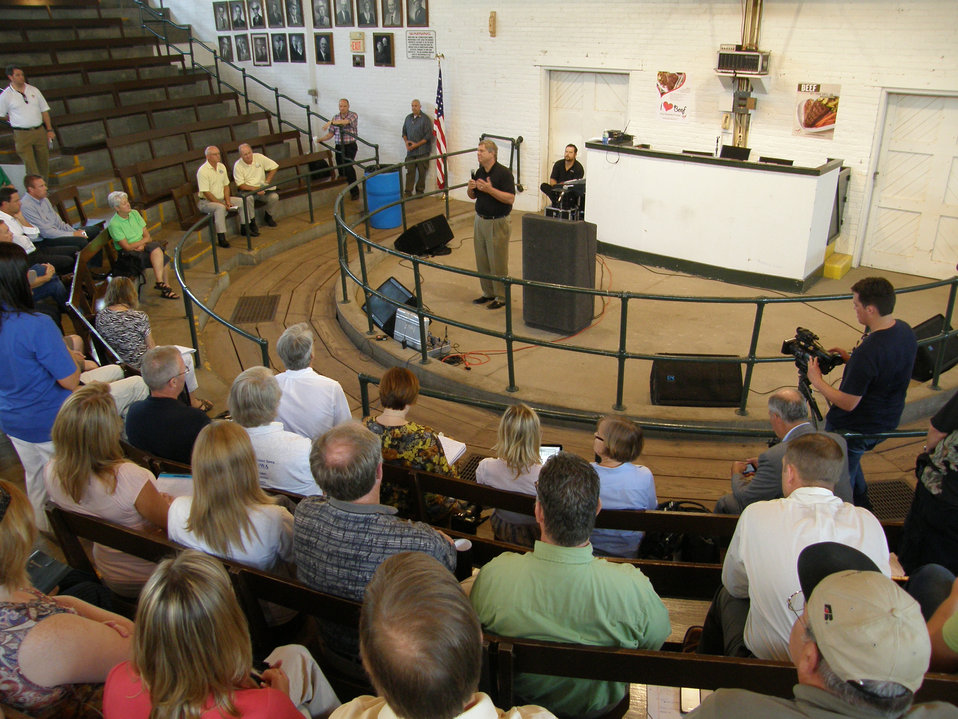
Agriculture Secretary Tom Vilsack hosted a White House Rural Forum at the Iowa State Fair in Des Moines, IA on Friday, Aug. 19, 2011. As chair of the White House Rural Council, Secretary Vilsack is working to coordinate Agriculture programs across the government and encourage public-private partnerships to improve economic conditions and create jobs in rural communities. The White House Rural Forums provide an opportunity for government leaders to hear directly from rural residents from around the country about their ideas on how to grow the economy.